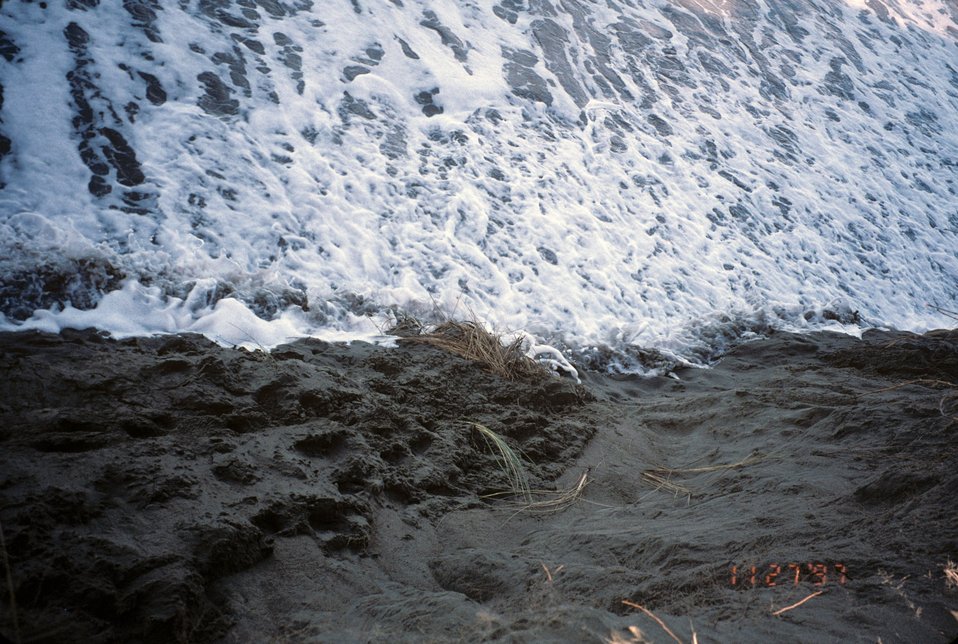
Dillon Beach